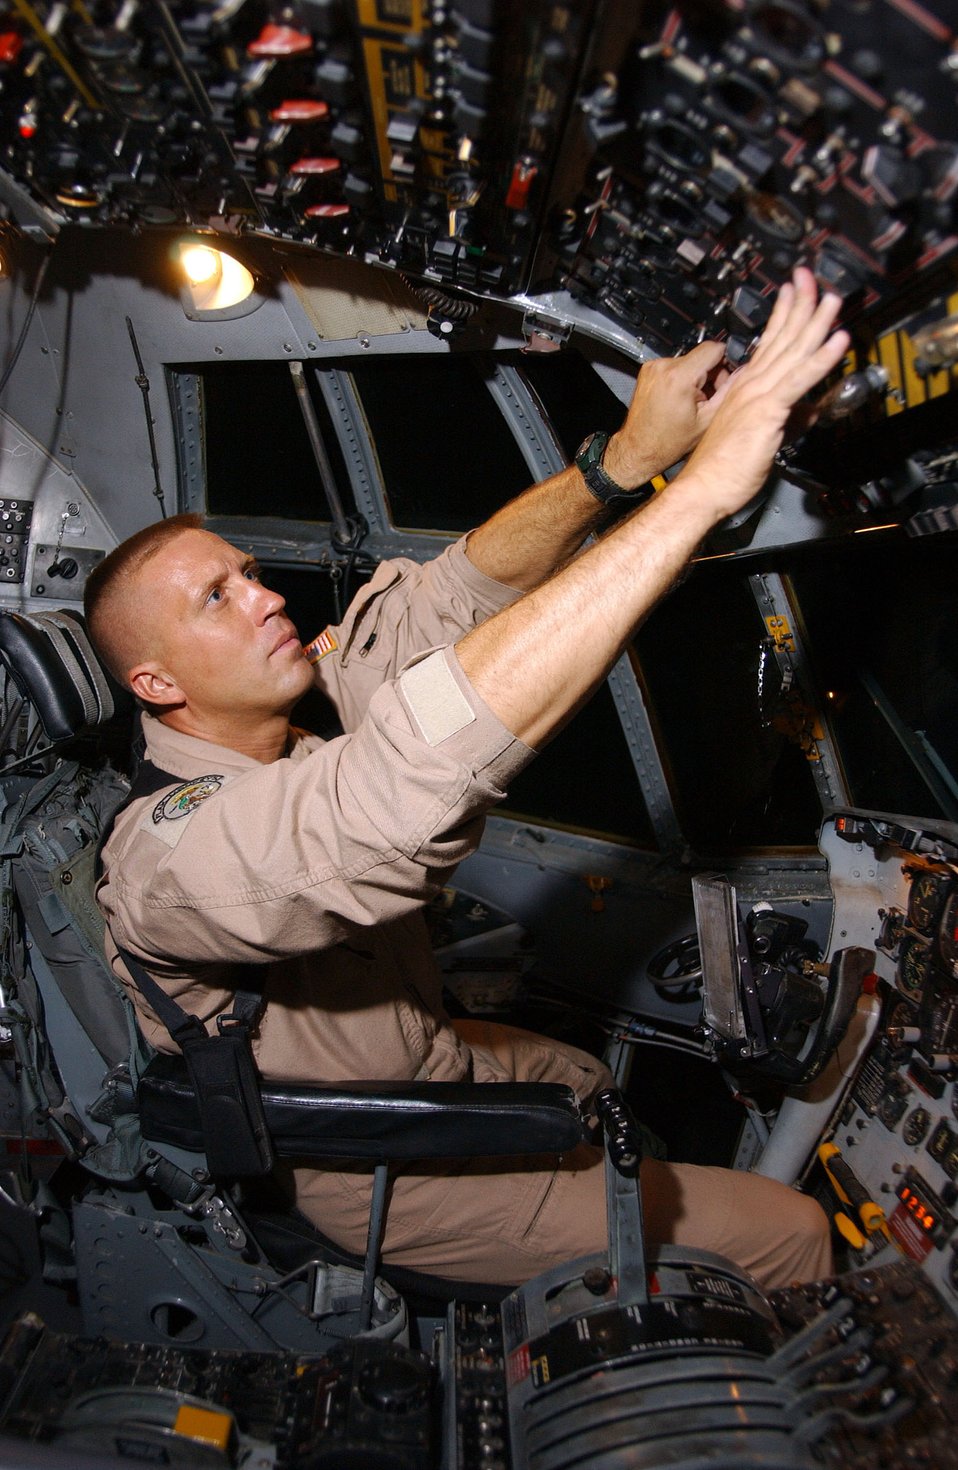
Silent protectors support Operation Enduring Freedom

BAGRAM AIR BASE, Afghanistan -- Master Sgt. Scott Drayna performs a routine check in the flight deck of an EC-130H Compass Call before performing tactical command, control and communications countermeasures. Sergeant Drayna is a flight engineer with the 41st Expeditionary Electronic Combat Squadron and is deployed from Davis-Monthan Air Force Base, Ariz.